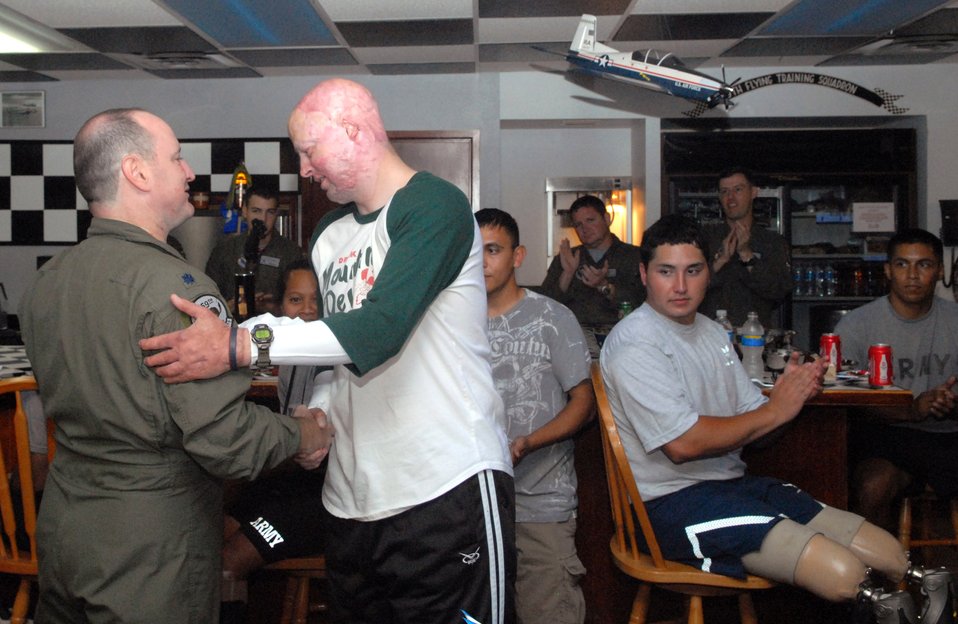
Wounded warriors tour Randolph

Marine Capt. Ryan Voltin thanks Lt. Col. Jimmy Donohue for hosting a tour of the 559th Flying Training Squadron during a June 27 trip to Randolph Air Force Base, Texas. Captain Voltin, a wounded war veteran, and 12 other wounded warfighters recovering from serious injuries toured the base and flew a simulator at the 559th Flying Training Squadron. The wounded warriors are currently receiving care at the Center for the Intrepid at Brooke Army Medical Center in San Antonio. Colonel Donohue is the 559th FTS commander.